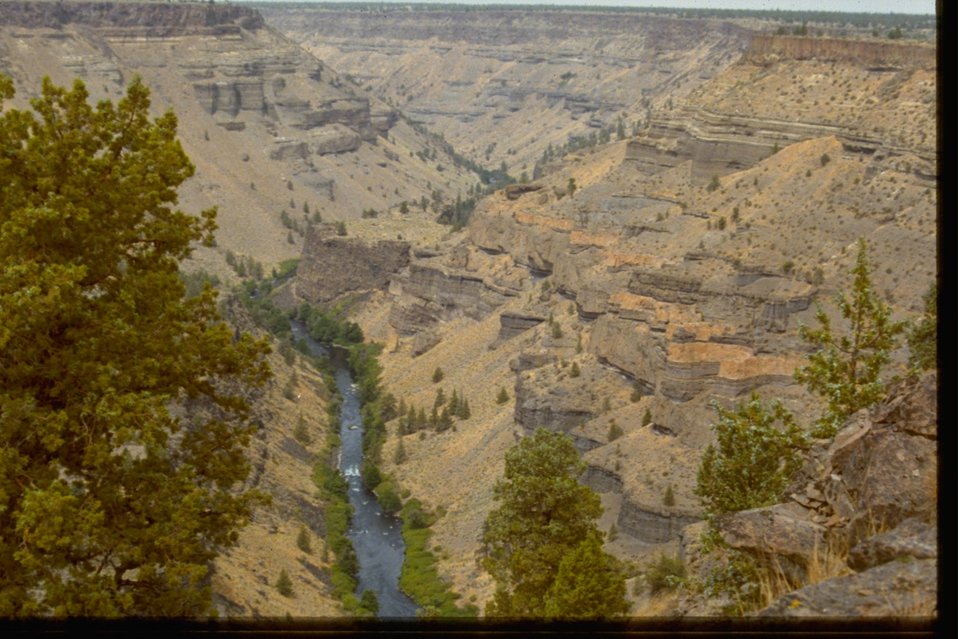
Scenic view of Steelhead Falls.